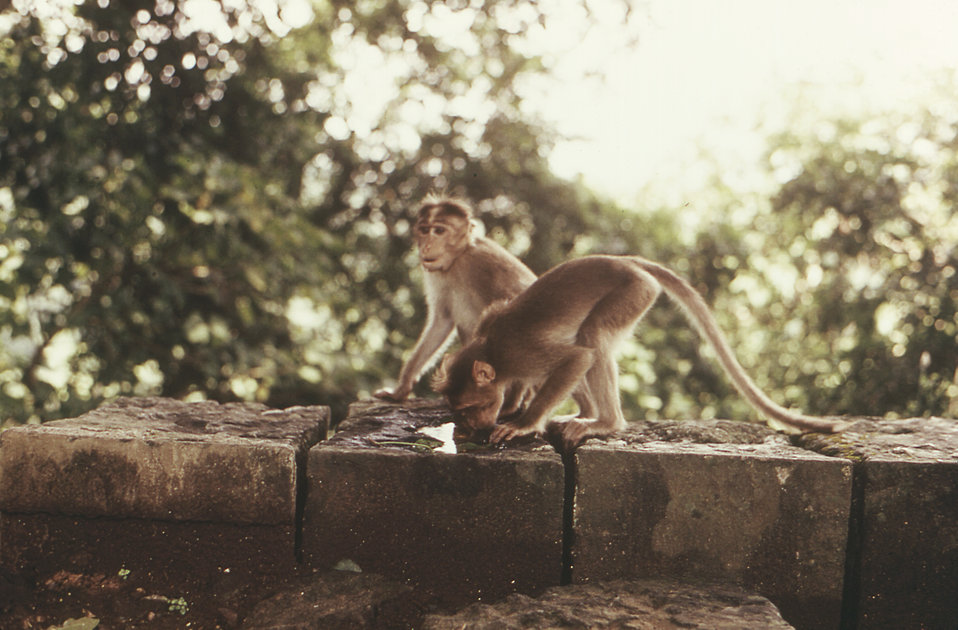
Theses two rhesus monkeys, Macaca mulatta, photographed here were perched atop a rock wall somewhere in northern India during a 1974 trip made by Centers for Disease Control (CDC) personnel to that region.